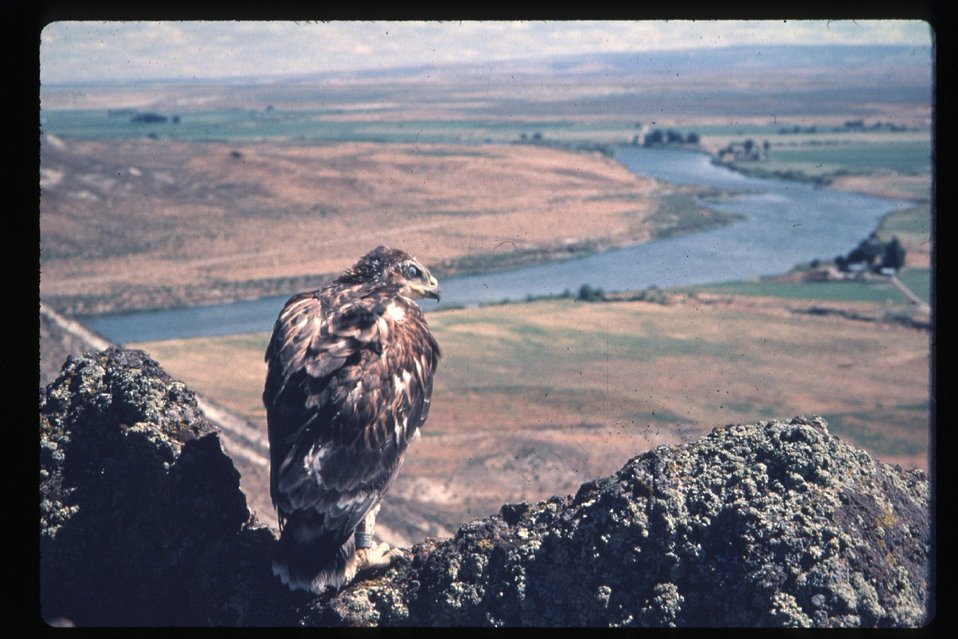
Ferruginous Hawk nesting Birds of Prey National Conservation Area BOP NCA Owyhee Field Office LSRD Lower Snake River District